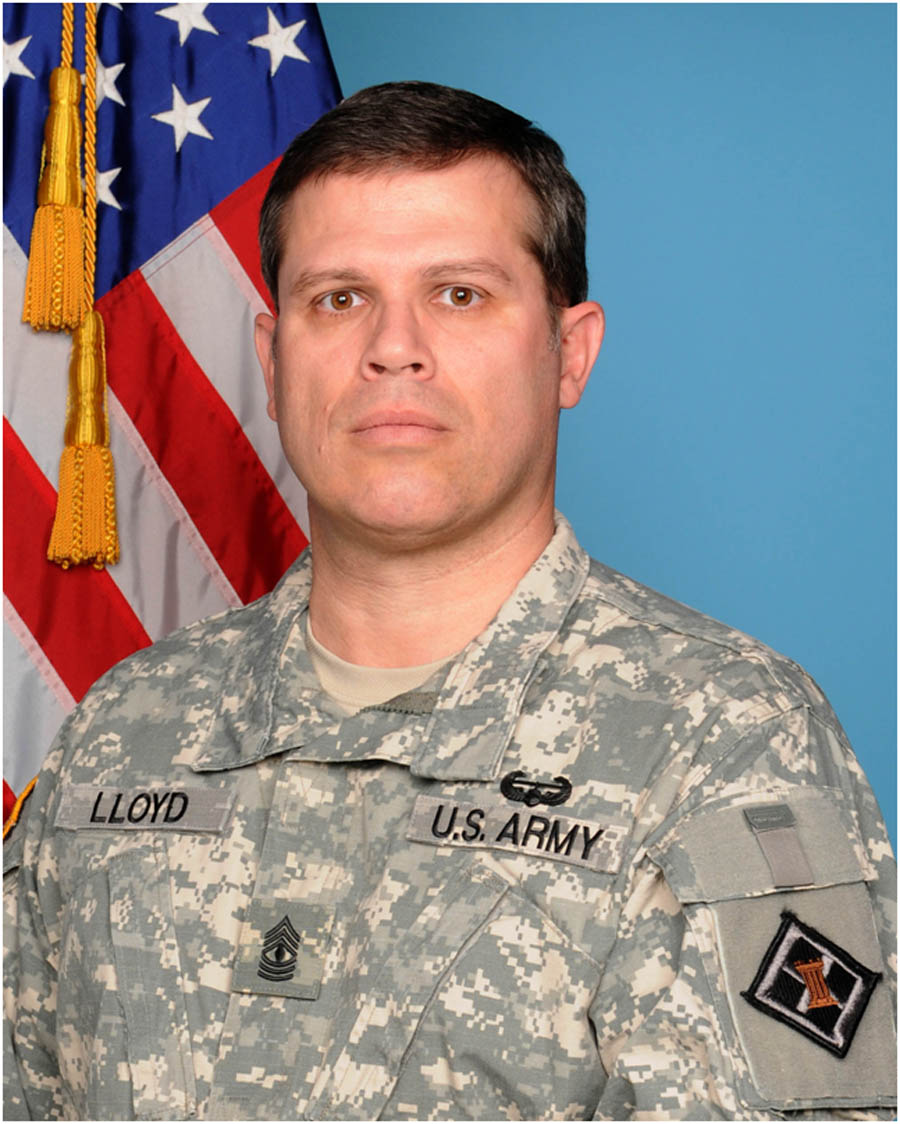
James Lloyd

James M. Lloyd.
Lloyd is currently the 390th Engineer Company (V), Chattanooga, TN as the unit’s First Sergeant. A 27 year veteran of the U.S. Army and U.S. Army Reserve, Master Sergeant Lloyd, has served in El Salvador, Honduras, Nicaragua, Guatemala, South Korea, Ft. Rucker, and Saudi Arabia during Desert Storm..
He has been awarded the Air Assault Badge, two Meritorious Service Medals , six Army Commendation Medals, two Joint Service Achievement Medals, four Army Achievement Medals, the Kuwait Liberation Medal, Southwest Asian Service Medal with two bronze stars, and many more. .
He is a Construction Representative for the U.S. Fish & Wildlife Service, Region 4, Division of Engineering in Atlanta, GA and works at Tennessee National Wildlife Refuge.